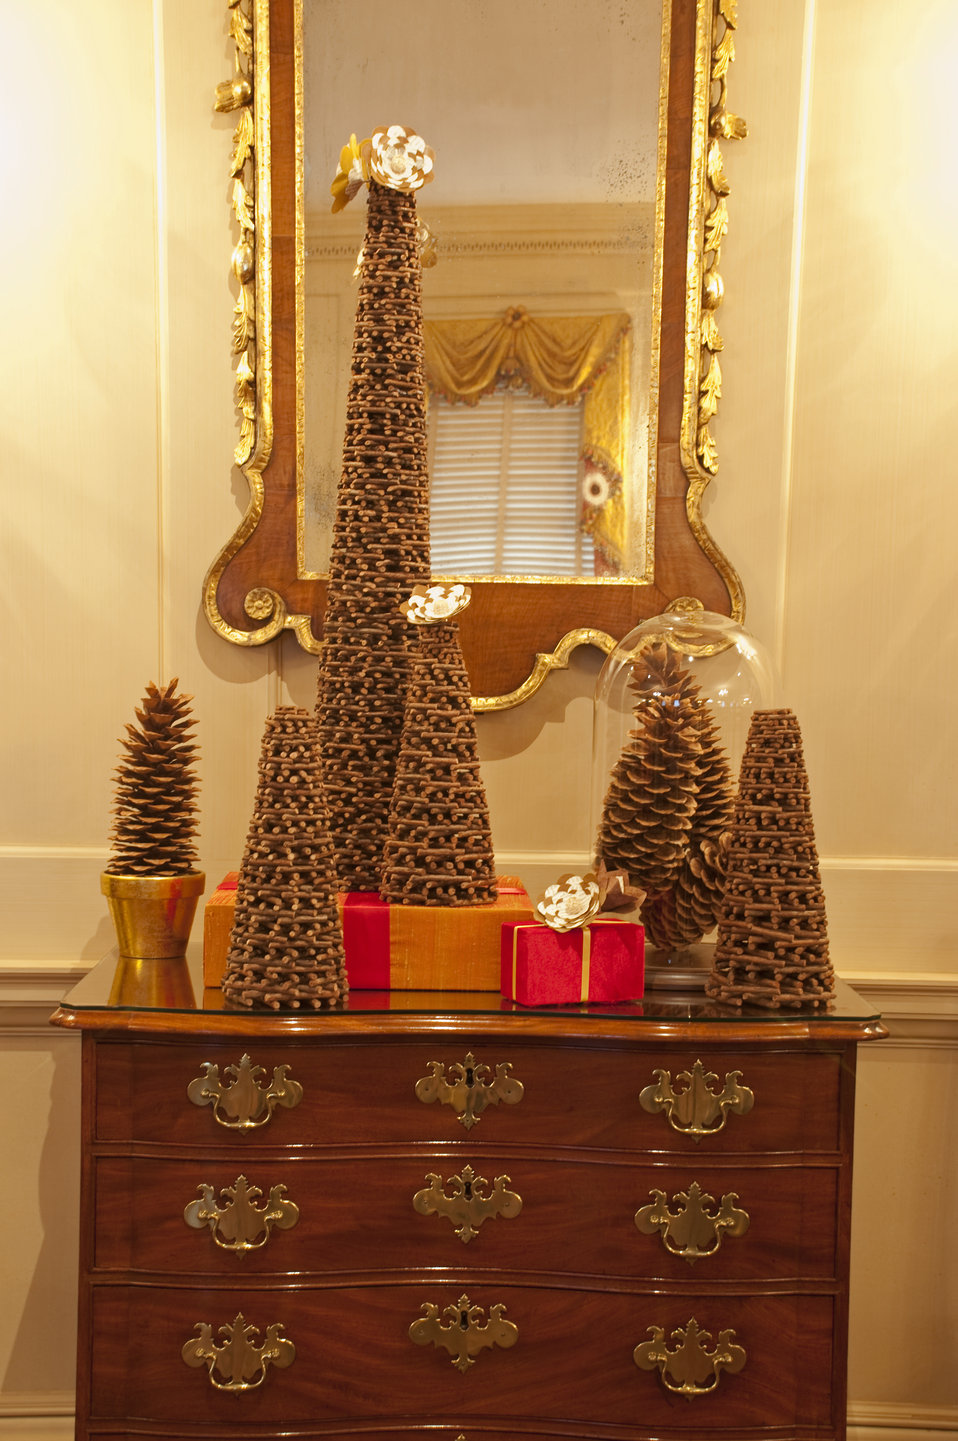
The U.S. Department of State Partners With Time Inc. and InStyle To Decorate the John Quincy Adams State Drawing Room

The U.S. Department of State partners with Time Inc. and InStyle to decorate the Diplomatic Reception Rooms for the Holidays in December 2010. Pictured in this photo is the John Quincy Adams State Drawing Room.